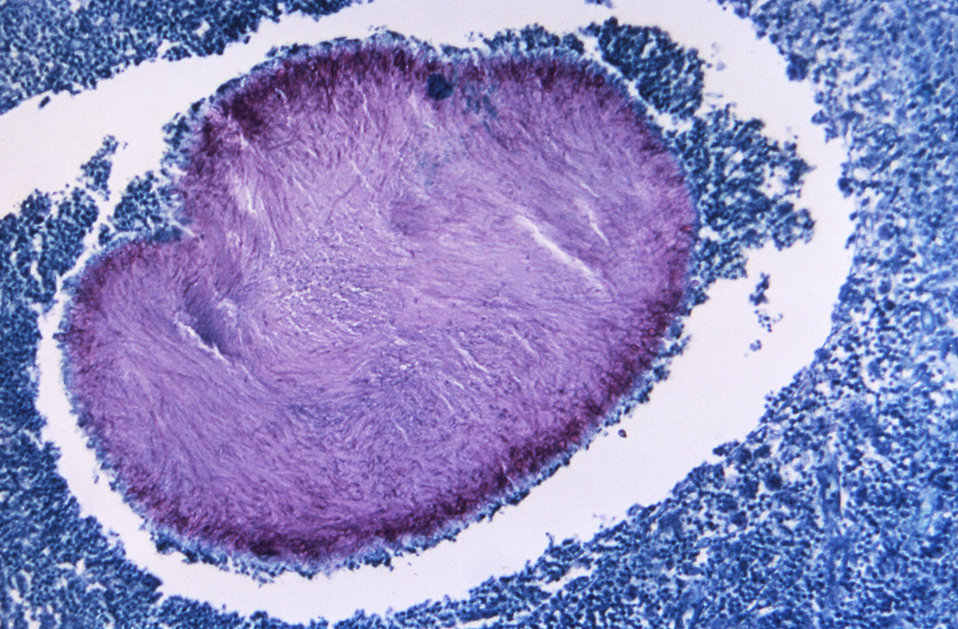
Under a magnification of 100X, and stained using the periodic acid-Schiff (PAS) staining method, this photomicrograph revealed the histopathologic changes found in a tissue section from a patient with a case of eumycotic mycetoma, which was due to the organism, Pseudallescheria boydii, formerly known as Allescheria boydii, an ascomycetous mould.